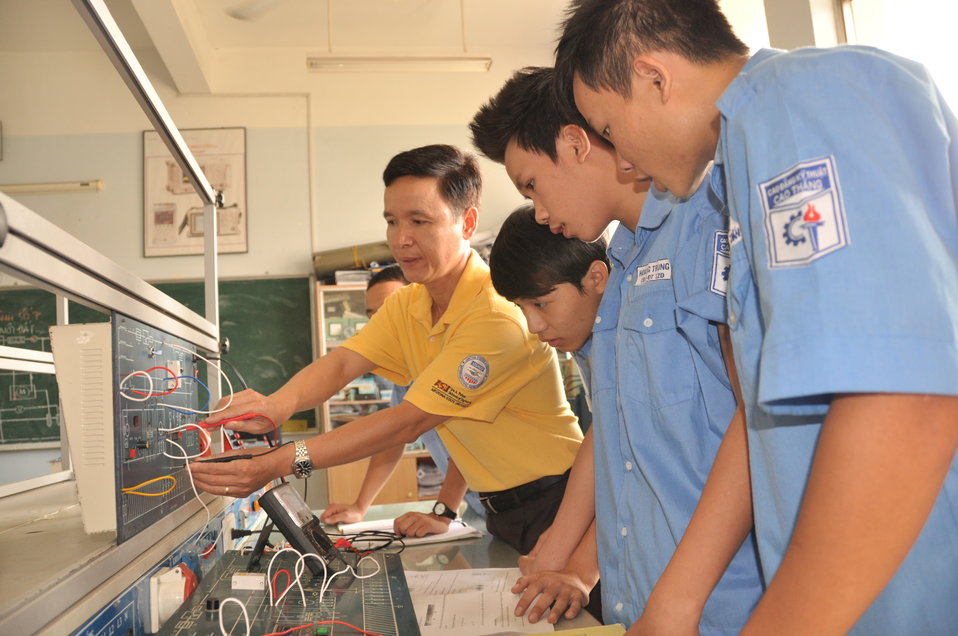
HEEAP Partner, Cao Thang Technical College

Faculty trained with support of HEEAP
Ho Chi Minh City, January 12, 2013